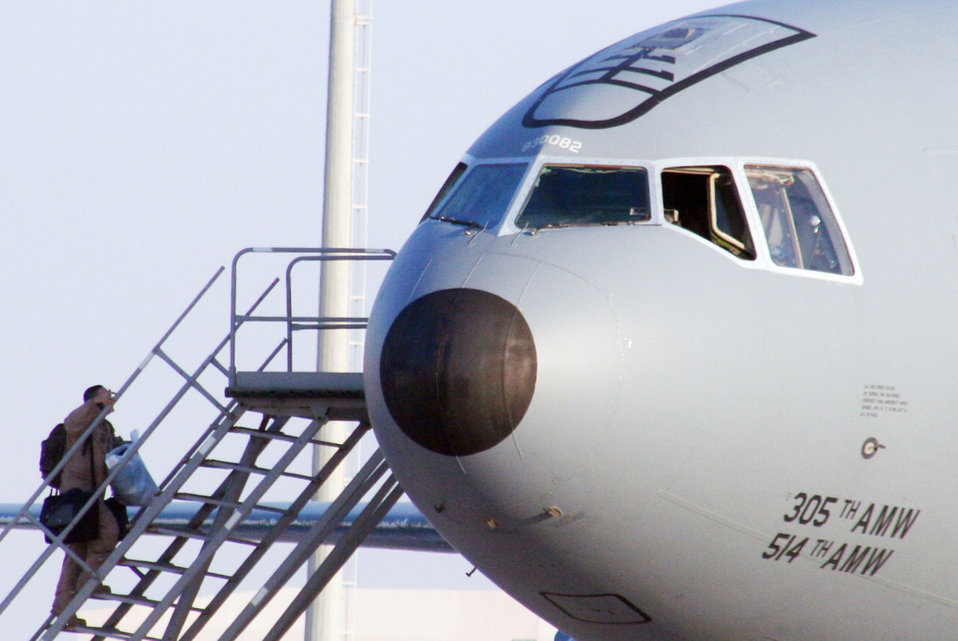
KC-10s keep aircraft flying in Southwest Asia

An aircrew member prepares to board a KC-10 Extender from Joint Base McGuire-Dix-Lakehurst, N.J., for a mission during operations Jan. 6, 2010 at an air base in Southwest Asia. This KC-10 is assigned to the 908th Expeditionary Air Refueling Squadron of the 380th Air Expeditionary Wing.